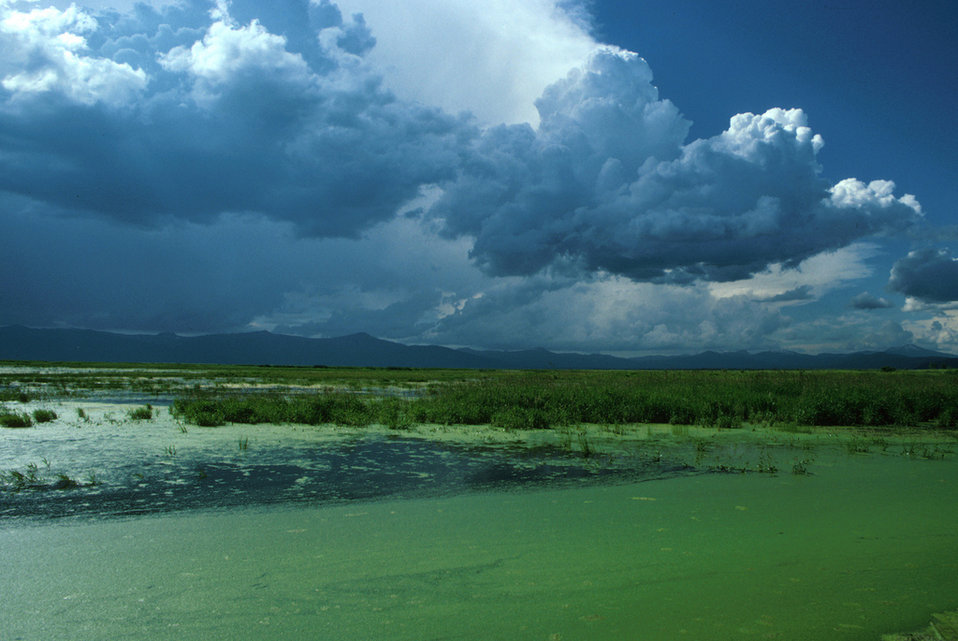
storm on the lake

Klamath National Wildlife Refuge Complex, CA-OR border